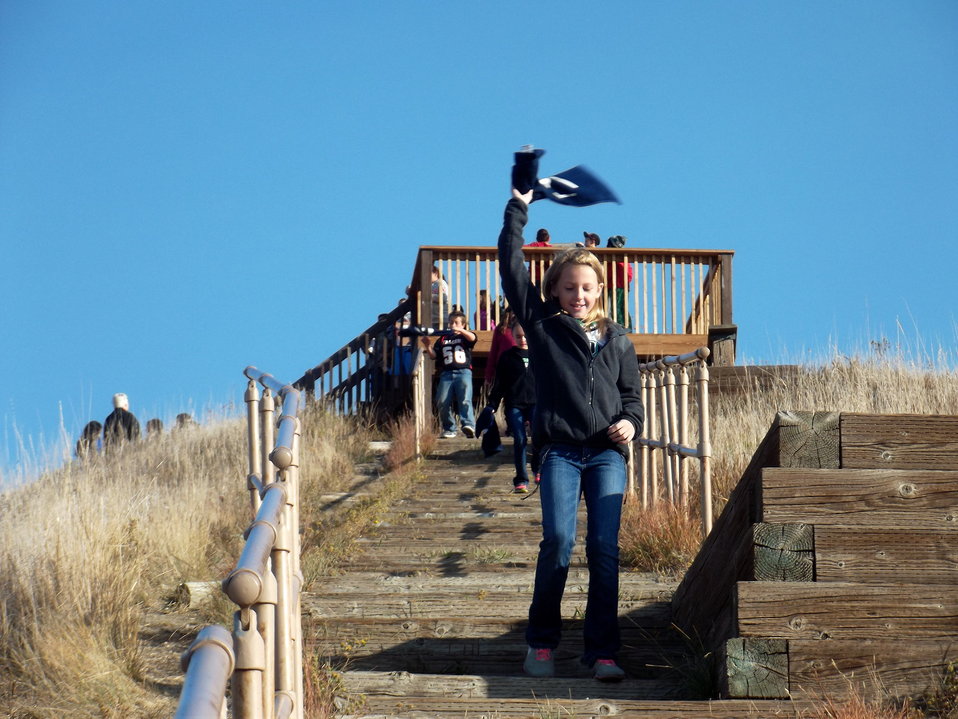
Get Your Goose On!

Photo taken at Sullys Hill National Game Preserve.